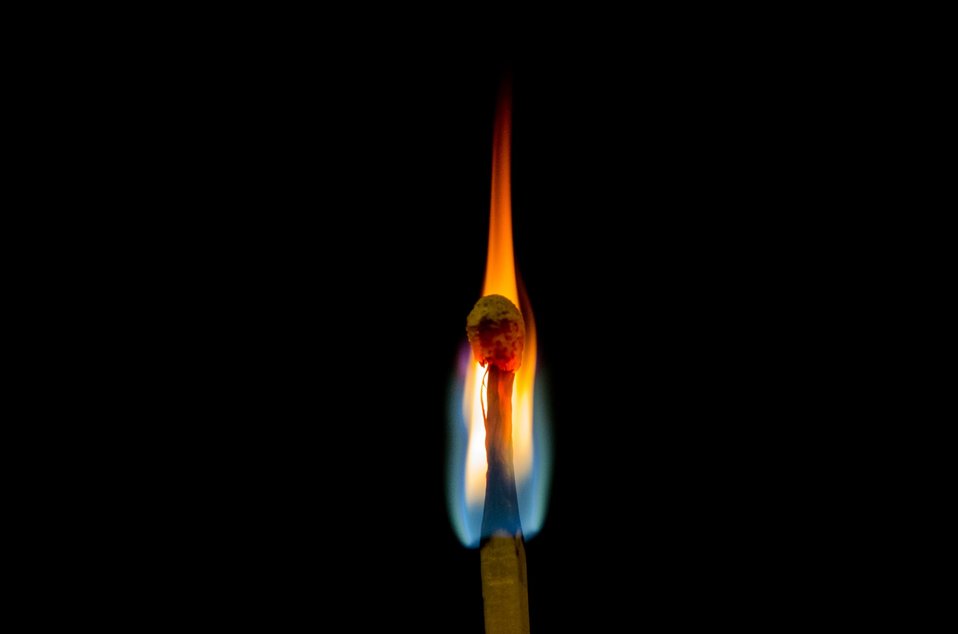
Lighted match on the black background.